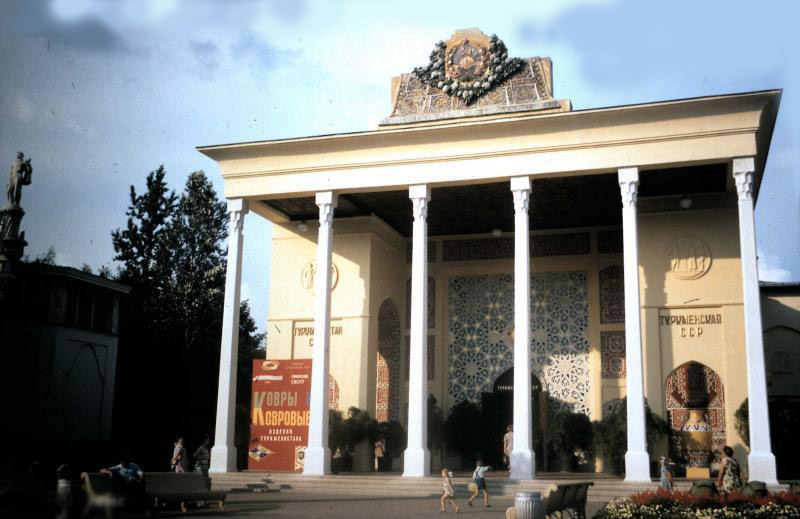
Русский: был построен к 1939 году , снесён в 1966 году